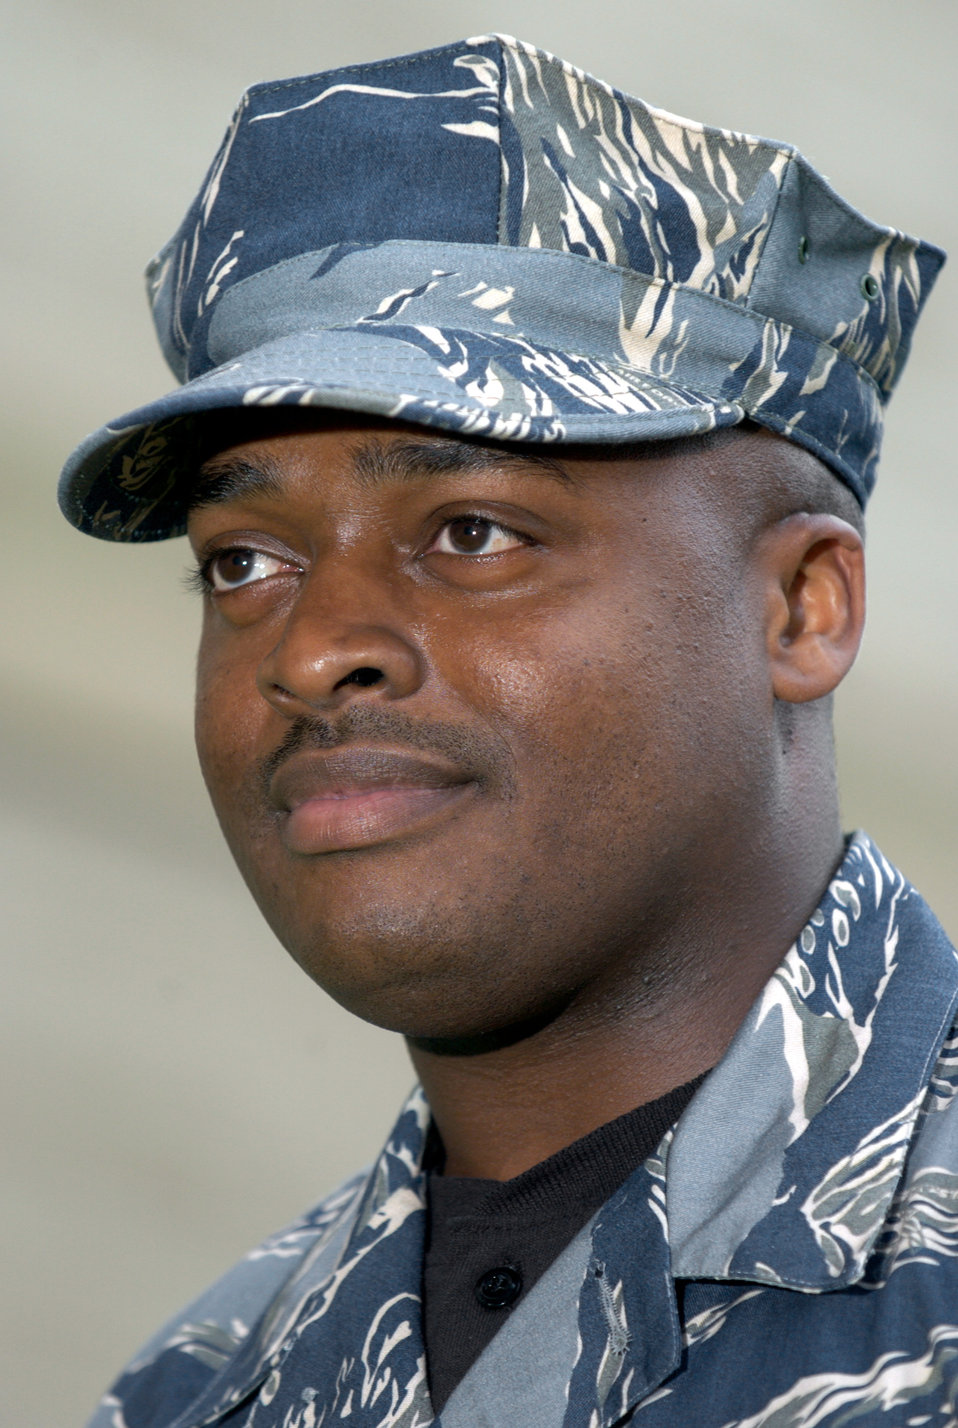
Alford

WASHINGTON (AFPN) -- Staff Sgt. Daryl Alford dons the test Air Force utility uniform in the Pentagon’s courtyard. The blue, gray and green tiger-stripe camouflage ensemble includes many new features intended to increase functionality while providing a distinctive look for the 21st century airmen. The uniforms will undergo wear-testing beginning in January 4. Airmen from a cross section of Air Force career fields will provide feedback on the fit, durability and functionality of the proposed ensemble which will come in men's and women's cuts.